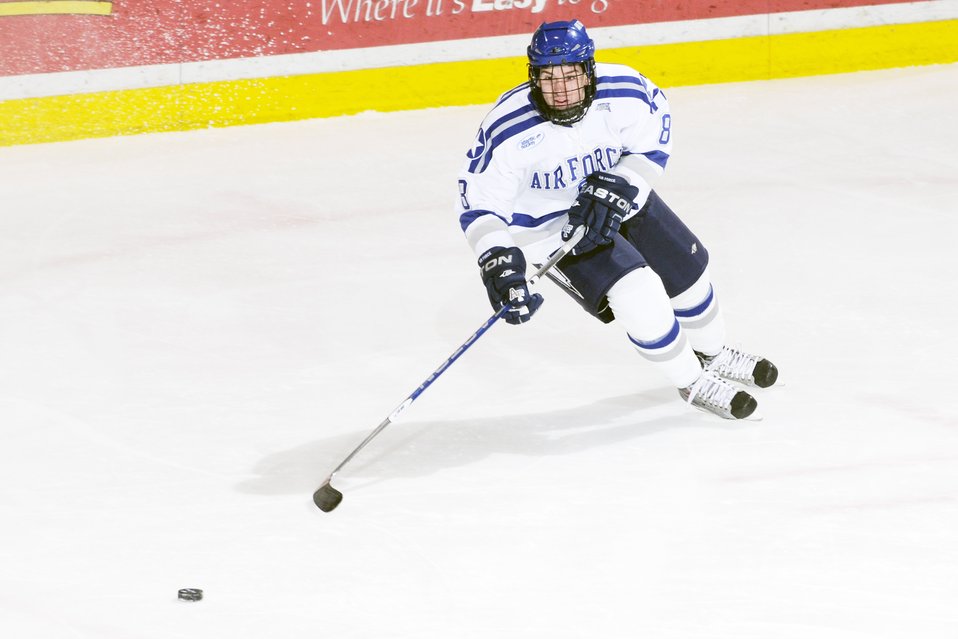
Falcons sweep hockey series

U.S. Air Force Academy junior forward Scott Kozlak gets control of the puck during the first period of the Falcon's game against American International College at the Cadet Ice Arena Dec. 5, 2009. Air Force defeated AIC 6-2, sweeping the series with a 5-3 win Dec. 4.